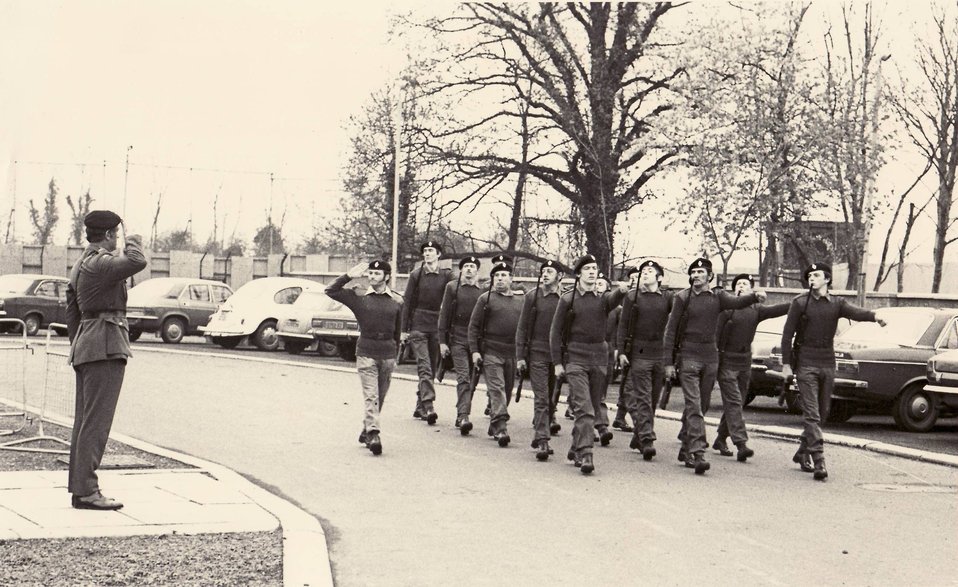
A platoon of soldiers at Mahon Barracks, Portadown